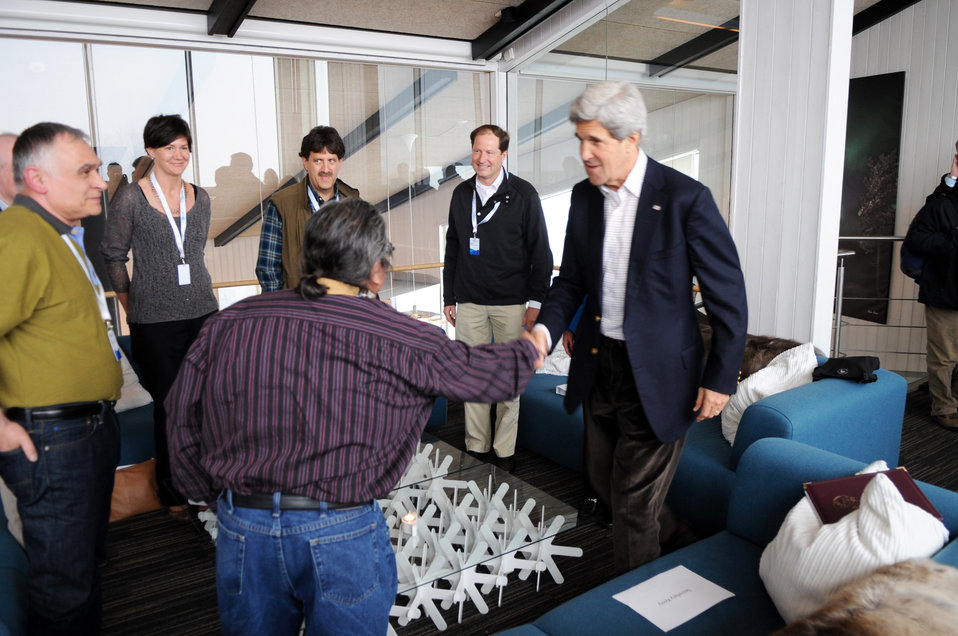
Secretary Kerry Shakes Hands With Alaskan Permanent Participants to the Arctic Council

U.S. Secretary of State John Kerry meets with Alaskan Permanent Participants to the Arctic Council in Kiruna, Sweden, on May 14, 2013.